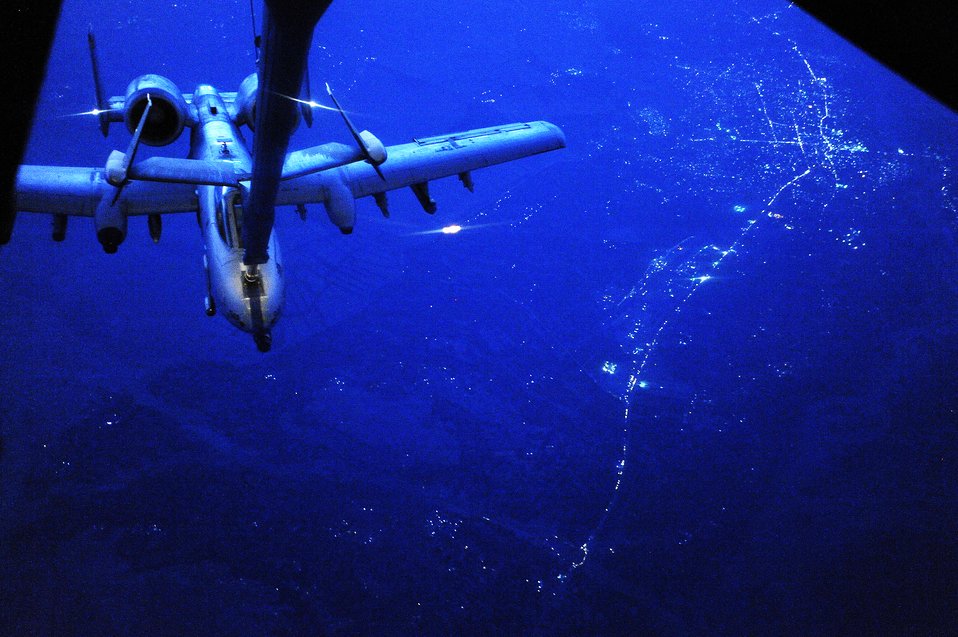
Night mission

Over Afghanistan, an A-10 Thunderbolt II receives fuel from a KC-10 Extender Oct. 5, 2009.